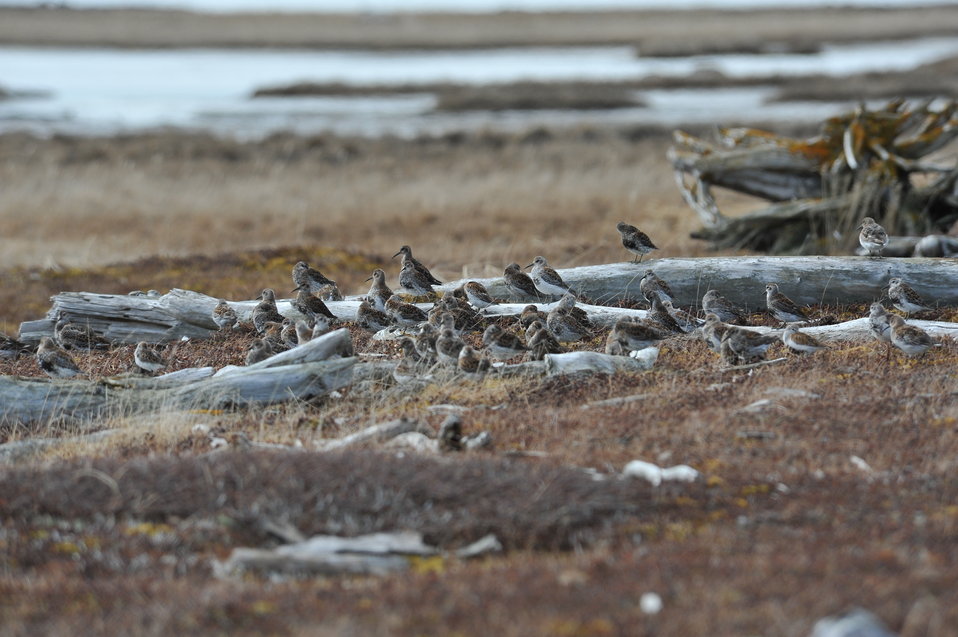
Group of shorebirds

USFWS Yukon Delta NWR